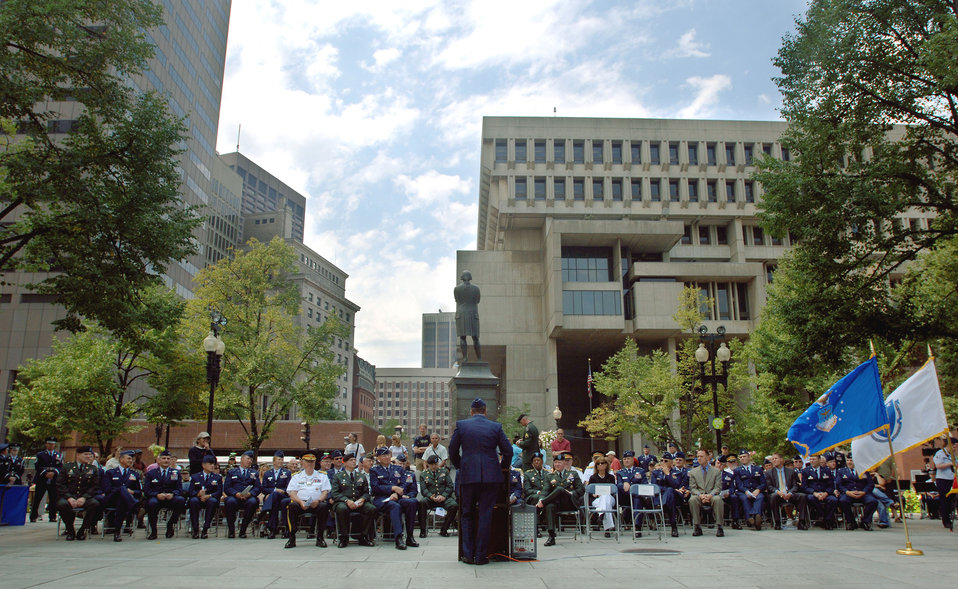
Boston proclamation party gets Air Force Week rolling

The Massachusetts governor's office and U.S. Air Force officials announced Air Force Week New England during a proclamation ceremony in front of historic Faneuil Hall in downtown Boston Aug. 17.